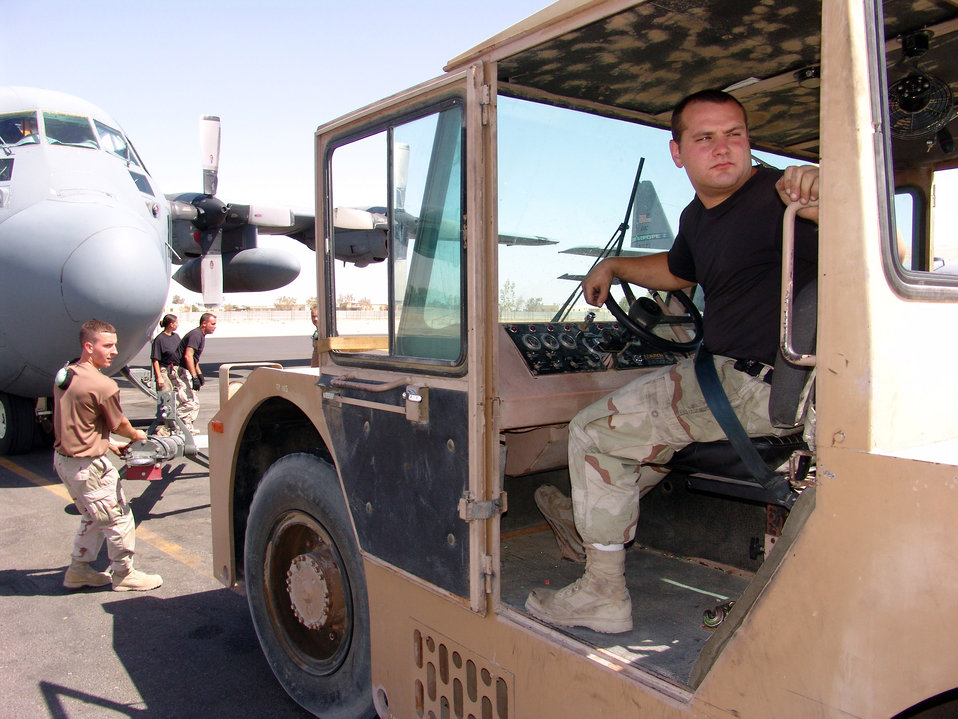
Operation IRAQI FREEDOM

SOUTHWEST ASIA -- Airman 1st Class David Burke (right) and Senior Airman Richard Murdock tow a C-130 Hercules to its parking spot in preparation for an arriving aircrew. The Airmen are assigned to the 386th Expeditionary Aircraft Maintenance Squadron and are deployed from Pope Air Force Base, N.C.